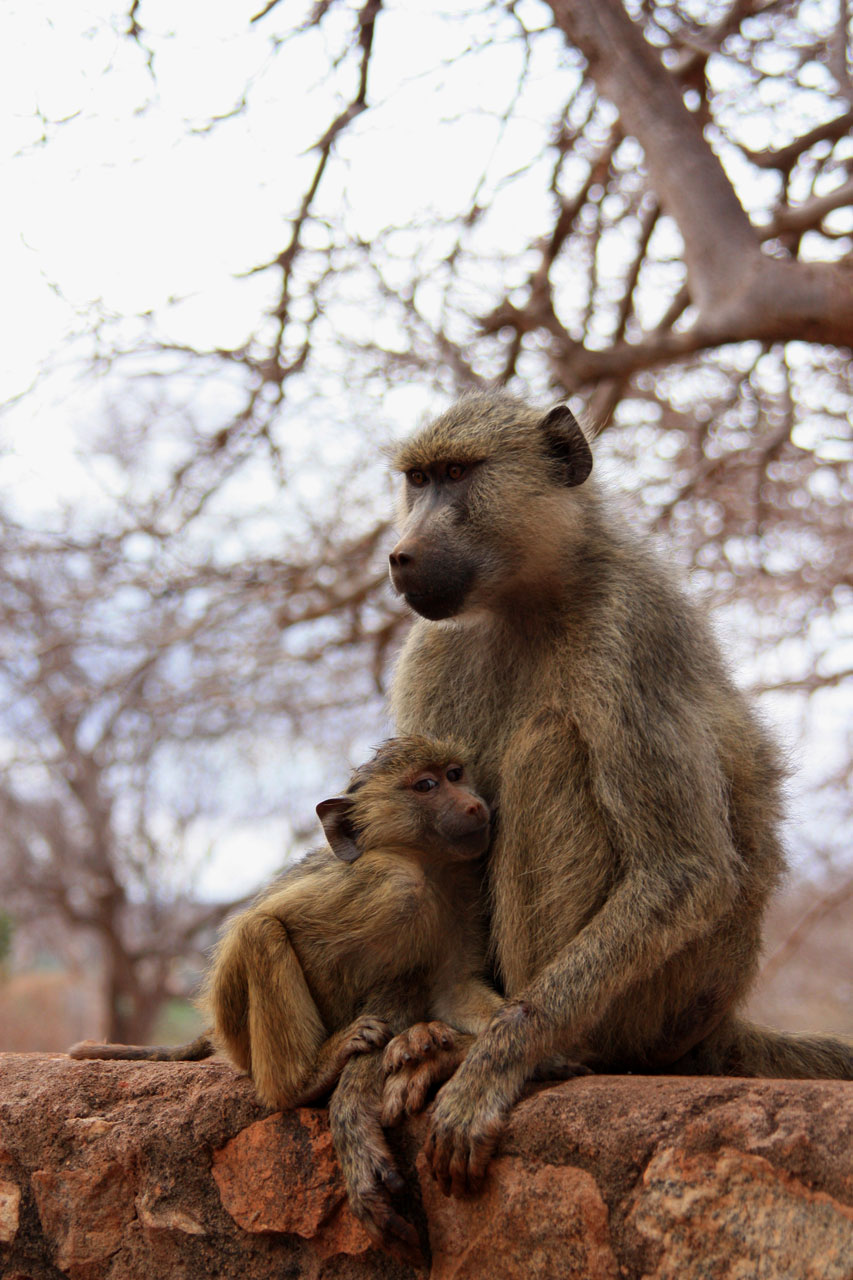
Monkey with baby.